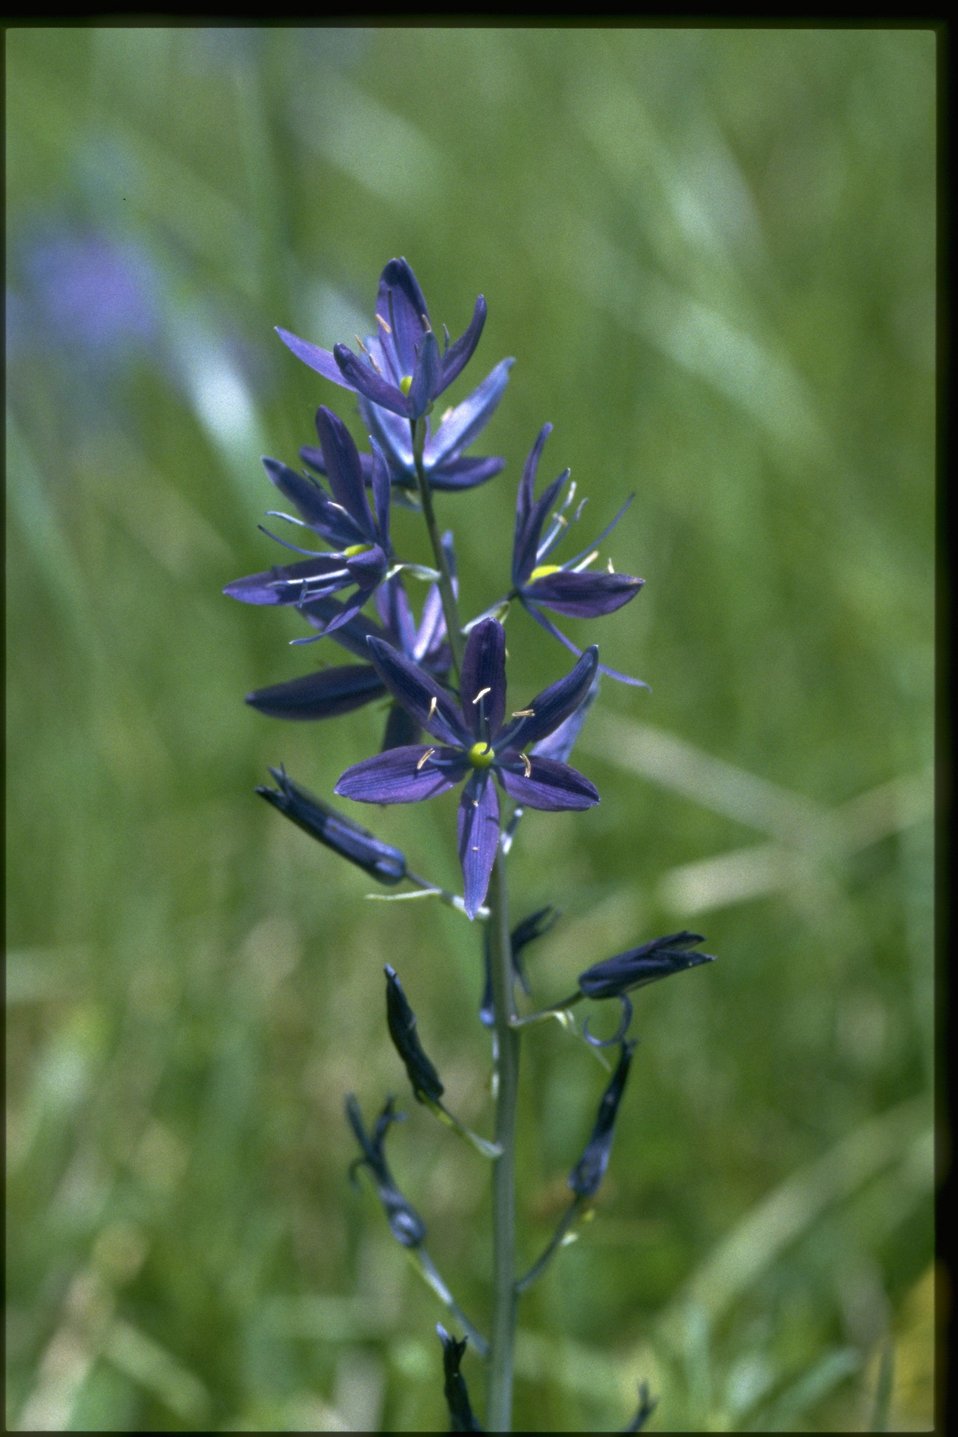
Medium shot of Camassia quamash.